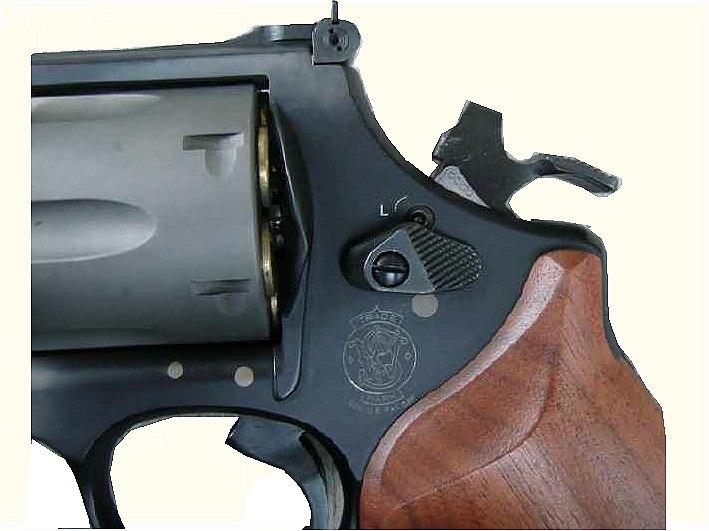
Lock failure on an S&W 329. The lock failed two times consecutively while firing 240 gr .44 Magnum loads. The hammer rebounded back part way and the flag came up temporarily tying the revolver up. The flag would drop and the revolver would function normally after the hammer was pulled back to release the tension on the locking mechanism. The cylinder did not rotate, the just fired brass was still under the firing pin.